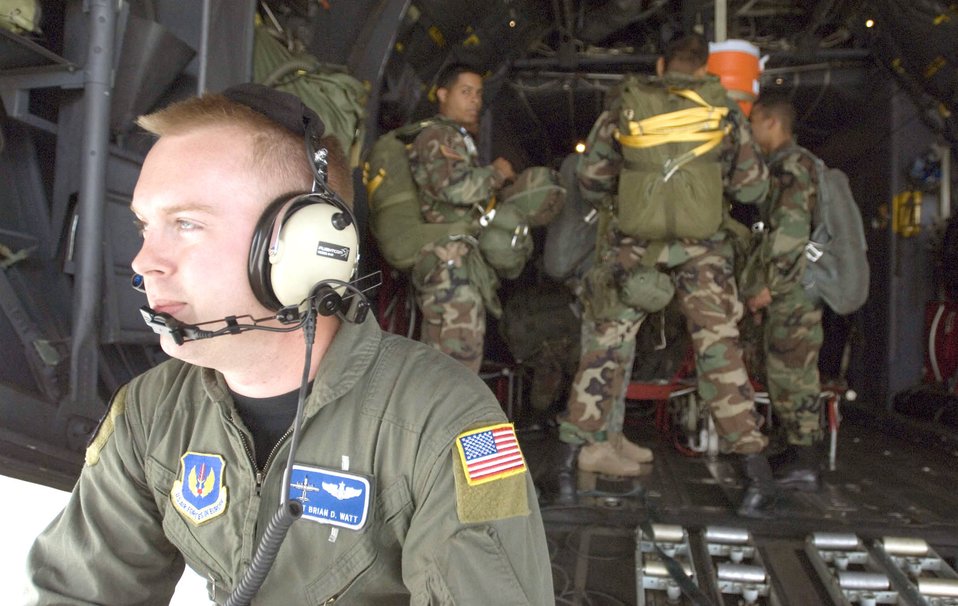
RAMSTEIN AIR BASE, Germany -- Staff Sgt. Brian Watt waits while parachutists get situated onto a C-130 Hercules. He is a loadmaster with the 37th Airlift Squadron.